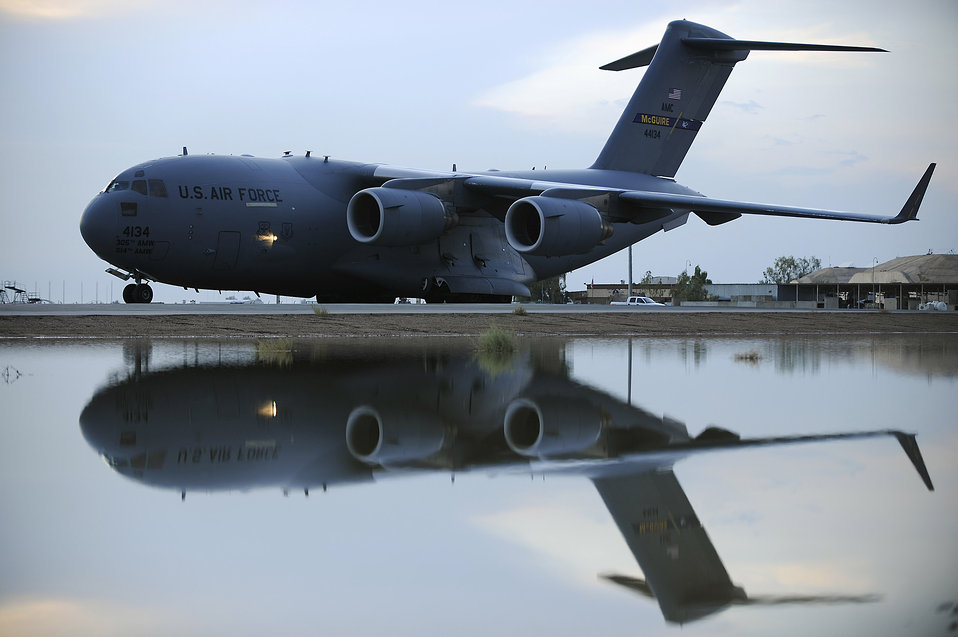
Double-take C-17

A C-17 Globemaster III taxis after landing Oct. 31 at Joint Base Balad, Iraq. The aircraft is reflected in a pool of water created due to recent flooding at the base. The C-17 is deployed from McGuire Air Force Base, N.J.